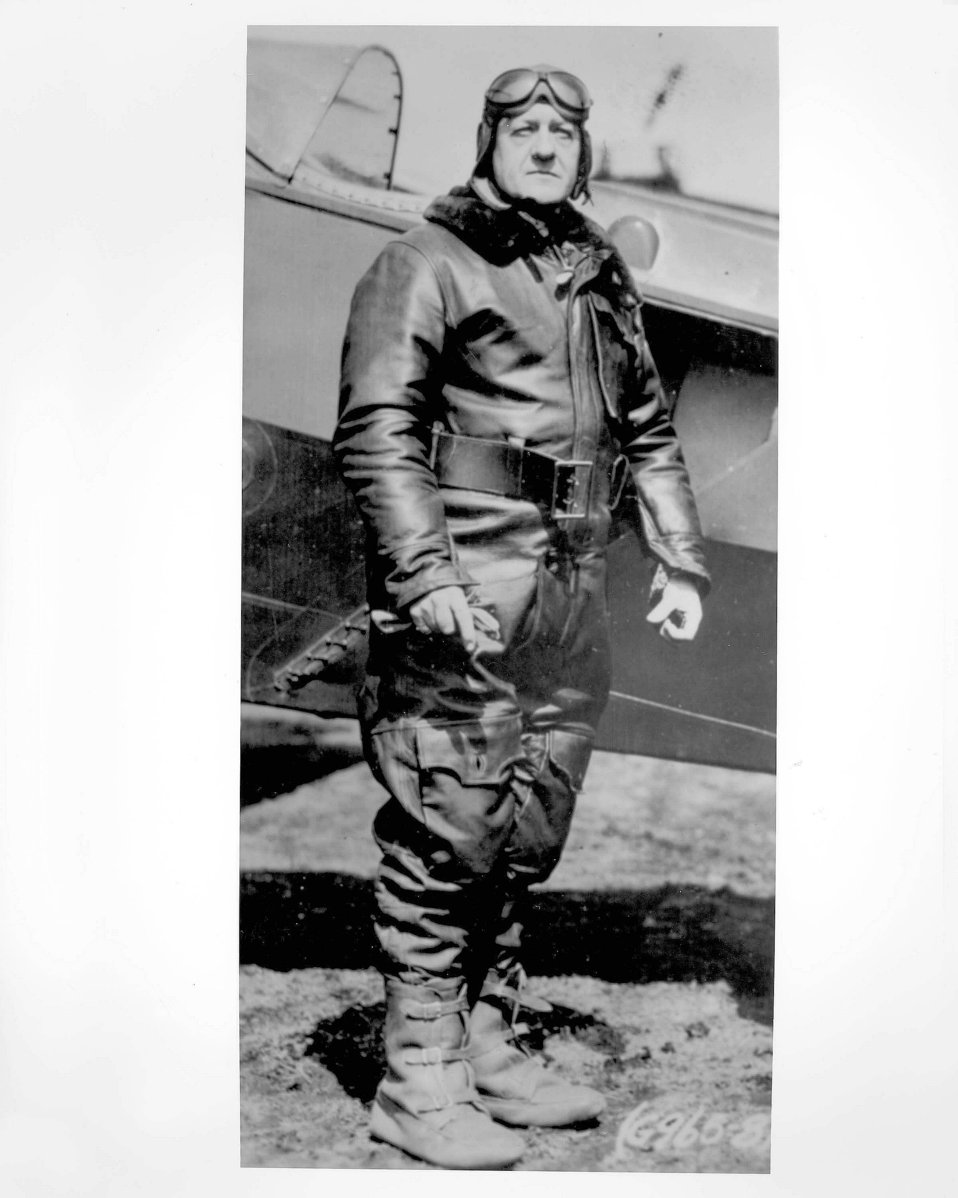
Benjamin Delahauf Foulois

EARLY YEARS -- Maj. Gen. Benjamin Delahauf Foulois. Transferring to Fort Sam Houston, San Antonio, Texas, in January 1910, General Foulois was in charge of the first airplane owned and used in the service of the U.S. Army. He was the only pilot, navigator, instructor, observer and commander in the heavier-than-air division of the U.S. Army from November 1909 to April 1911, and made many mechanical improvements, later incorporated in subsequent models of airplanes.